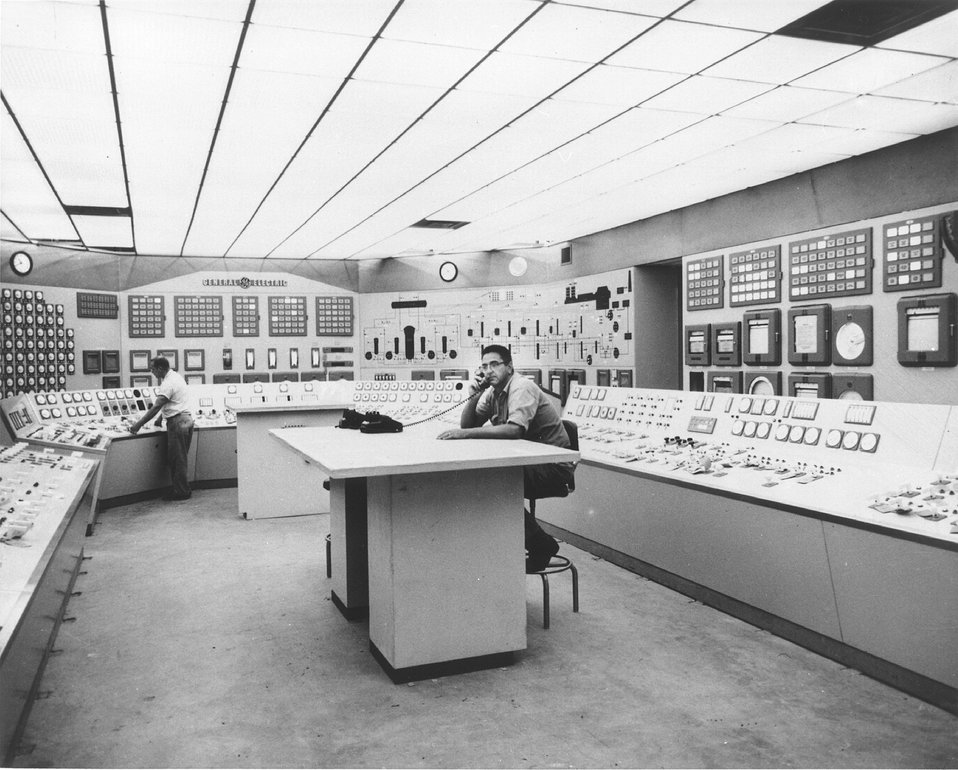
View of the control room of the Dresden Nuclear Power Station, a 208-megawatt boiling water plant near Morris, Illinois. Circa 1964.